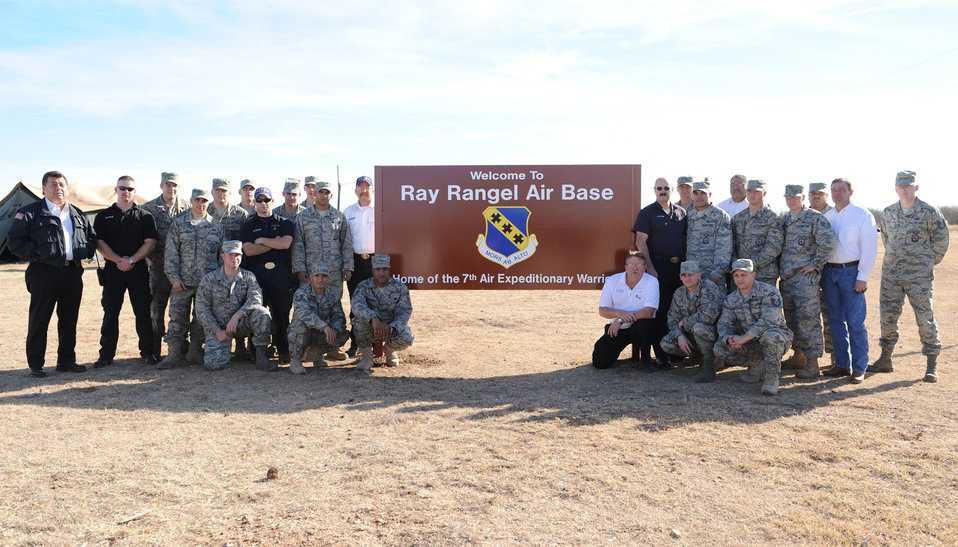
Dyess cantonment honors Airman

Firefighters pose by a new sign honoring one of Dyess Air Force Base's fallen Airmen at the cantonment area Dec. 14, 2011, at Dyess AFB, Texas. The cantonment area, used to host exercises and training sessions, has been renamed in honor of Staff Sgt. Ray Rangel, a 7th Civil Engineer firefighter who lost his life Feb. 13, 2005, at the age of 29, while on a rescue mission in Balad, Iraq.